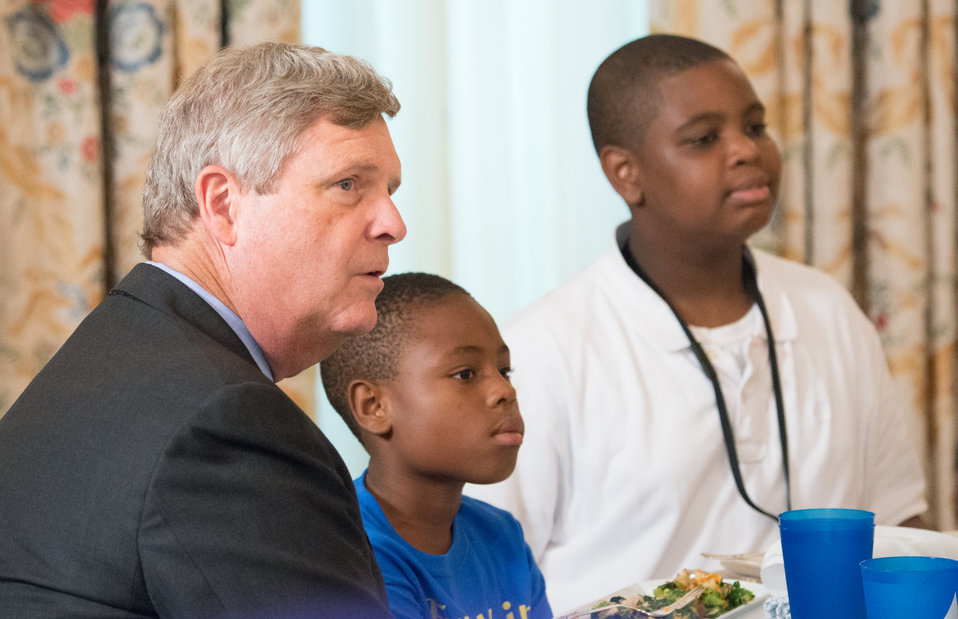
Agriculture Secretary Tom Vilsack with Washington, D.C. students from Cleveland Elementary School, Friendship Public Charter School, Kimball Elementary School, Bancroft Elementary School, Harriet Tubman Elementary School, who helped plant the garden in the spring make lunch from this year’s summer crop with the help of White House chefs and visiting school nutrition directors from Orlando, FL, Dallas, TX, and West Virginia in the State Dining Room of the White House in Washington, D.C. on Thursday, Jun. 12, 2014.